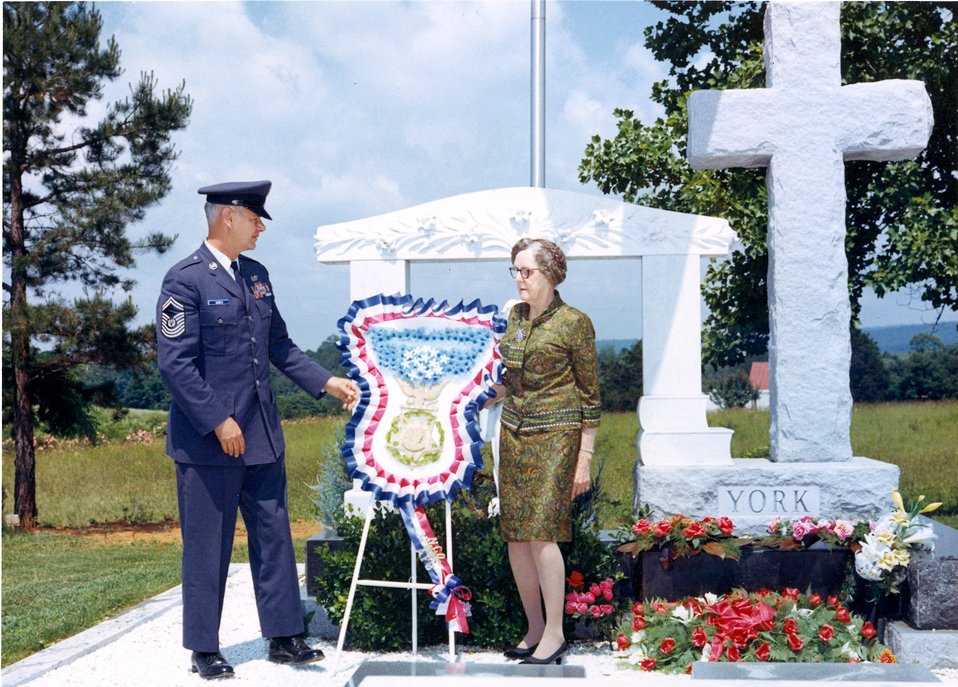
Enlisted perspective remembers the 'first'

Chief Master Sergeant of the Air Force Paul Airey meets Mrs. Alvin C. York and places wreath on her husband's grave site during ceremonies honoring the World War I hero. Chief Airey was selected as the first chief master sergeant of the Air Force on April 3, 1967. During his tenure he visited many bases and talked with many Airmen about improving conditions for the enlisted force.